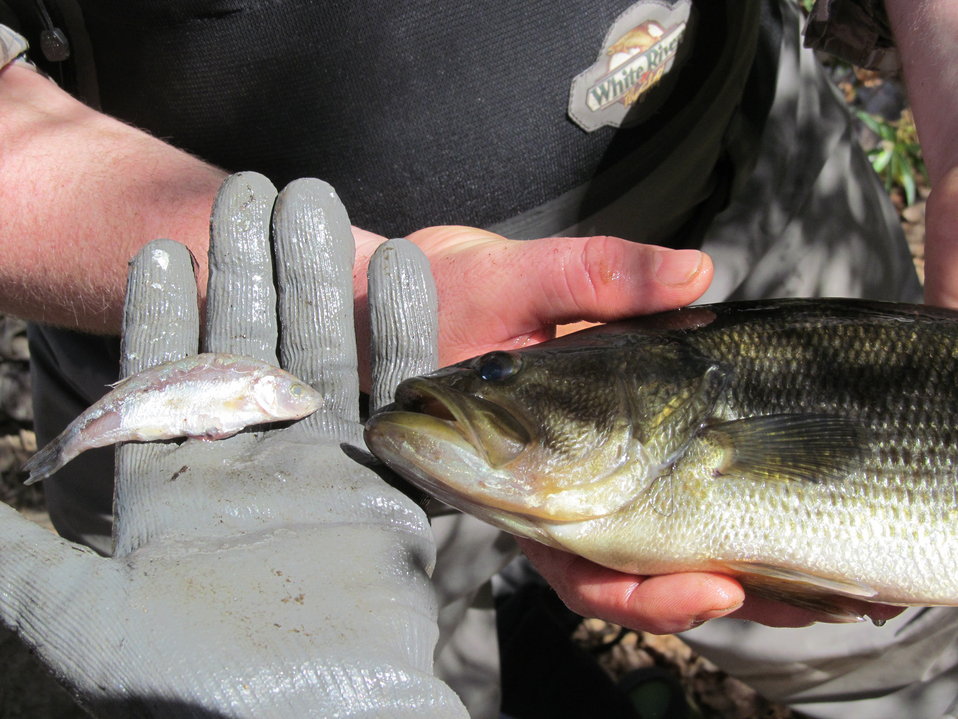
Santa Ana sucker conservation

This large mouth bass removed from the habitat of the Santa Ana sucker had been munching on another little native fish called the arroyo chub. Removing nonnative species is one way to help recover the Santa Ana sucker. (USFWS)